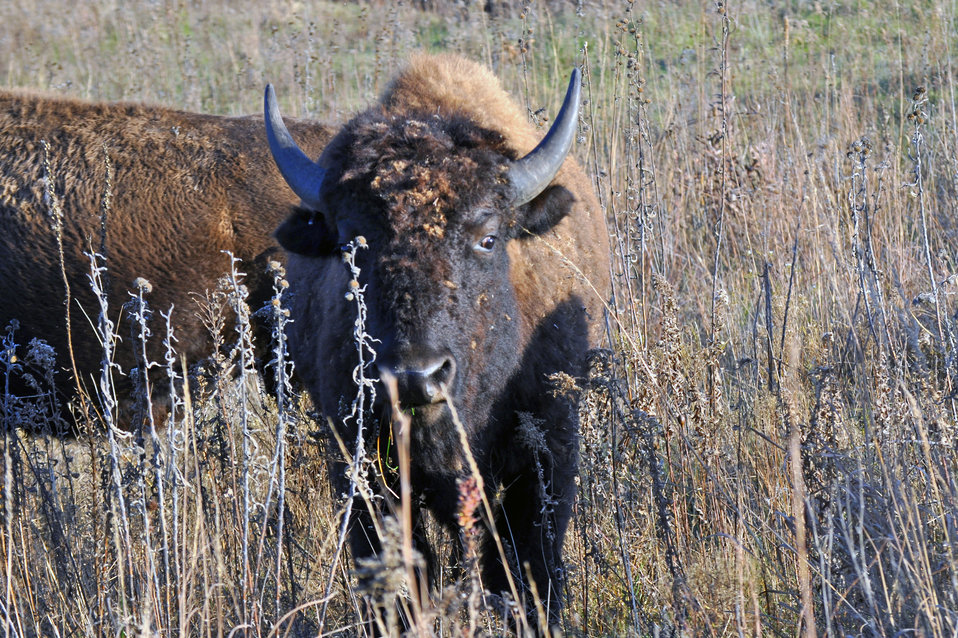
Bison at Dunn Ranch, an a prairie restored by The Nature Conservancy in northwest Missouri.